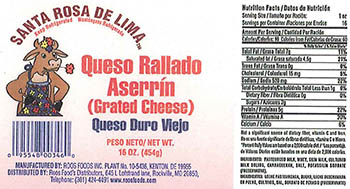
RECALLED – Variety of cheeses

February 23, 2014 – Product Recall – Roos Foods Voluntarily Recalls Variety of Cheeses (listed below) Due to Possible Health Risk.